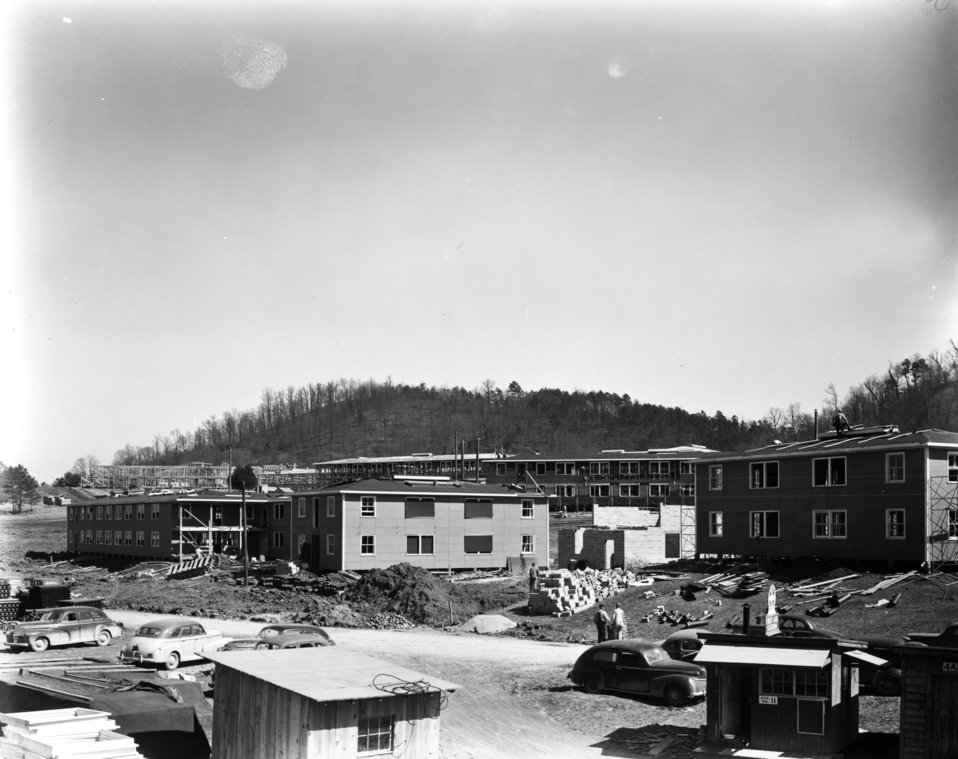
Construction activity at Oak Ridge